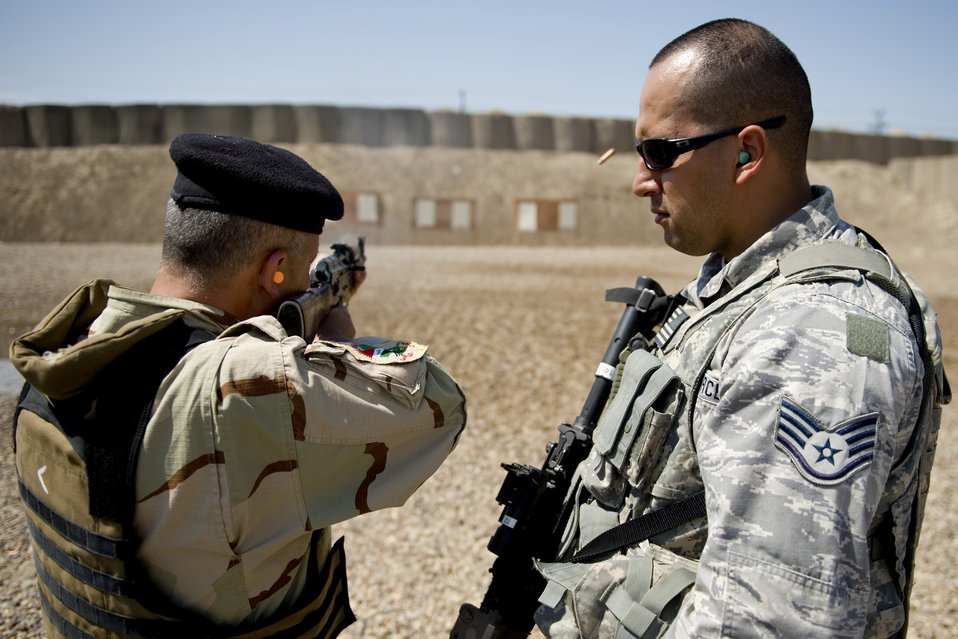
Airmen train Iraqi air force SFS

Staff Sgt. George Rincon observes an Iraqi airman during a firing drill March 29, 2011. Members of the 447th Eexpeditionary Security Forces Sqaudron trained Iraqi security forces airmen ensuring weapons qualification and teaching defensive tactics, vehicle searches and other force protection measures. Sergeant Rincon is assigned to the 447th ESFS.